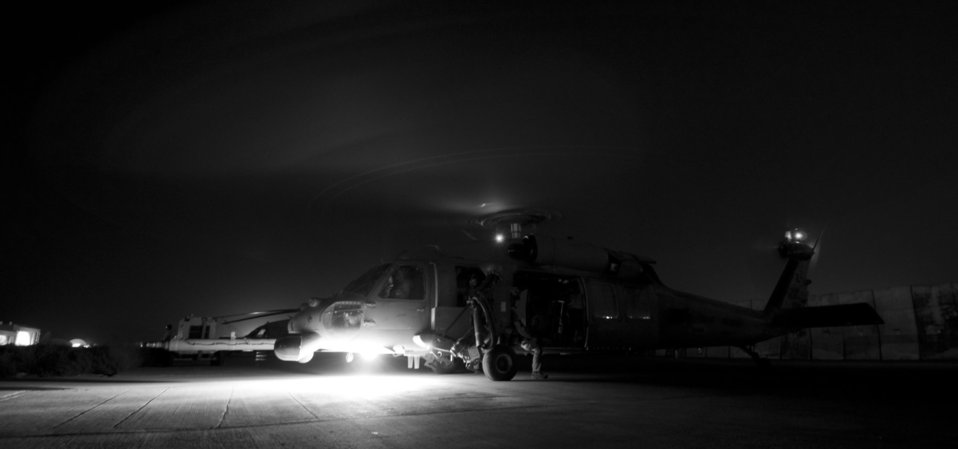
Nighttime operations

An HH-60 Pave Hawk spins up its rotors for takeoff July 17 at Bagram Air Base, Afghanistan. All HH-60Gs have night-vision goggles with lighting and a forward looking infrared system that make this airframe ideal for performing medical evacuation missions in adverse conditions, even under a new moon.